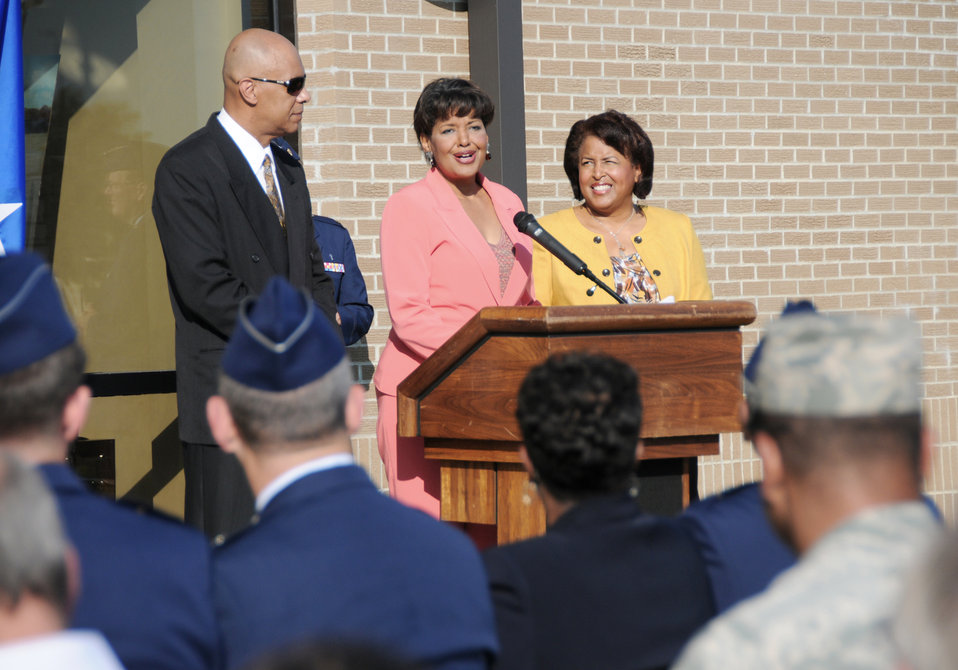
Aircraft maintenance facility dedicated to Tuskegee Airman

Airmen from Keesler Air Force Base, Miss., performed a dedication ceremony of the Consolidated Aircraft Maintenance Facility named after Col. (Ret.) Lawrence Roberts who served as a Tuskegee Airman and adopted Biloxi, Miss., as his home. The $22.6 million facility will be used to maintain the C-130J six-bladed composite propeller, and many other significant maintenance capabilities. The Roberts' family, along with more than 250 community and civic leaders, attended the ceremony.